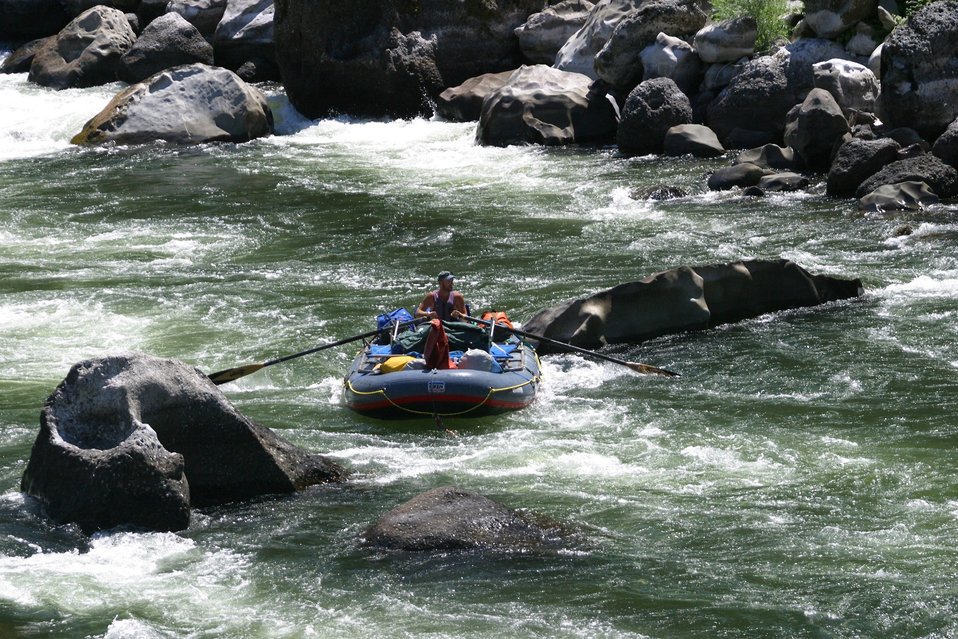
Boaters negotiate Blossom Rapids.